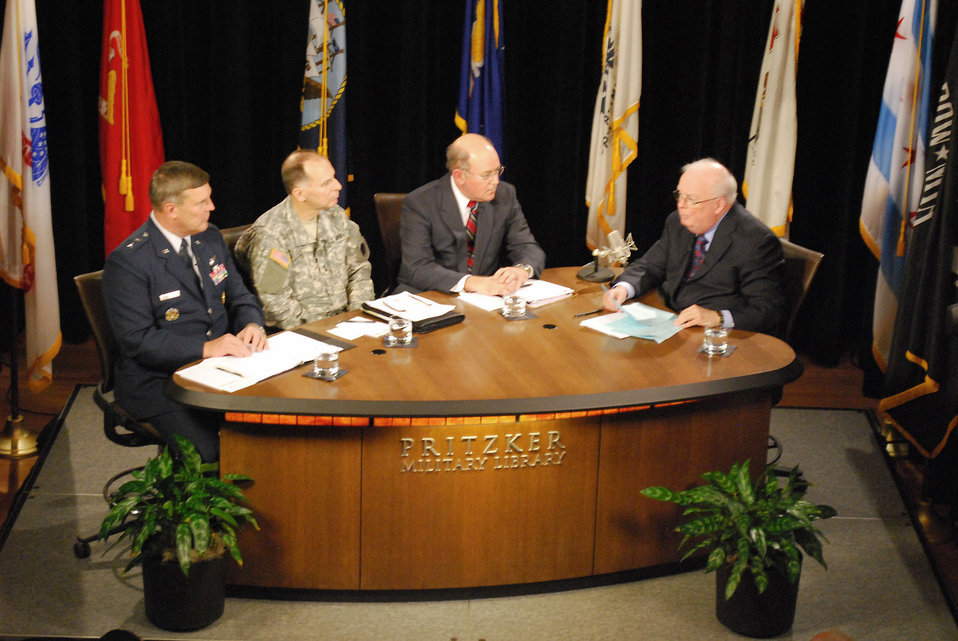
General addresses Reserve issues on Web cast

Major Gen. Robert E. Duignan participates in a panel discussion on Reserve and Guard forces with Army Maj. Gen. William L. Enyart, Dr. John D. Winkler and moderator John Callaway Dec. 4 in Chicago. The panel was part of